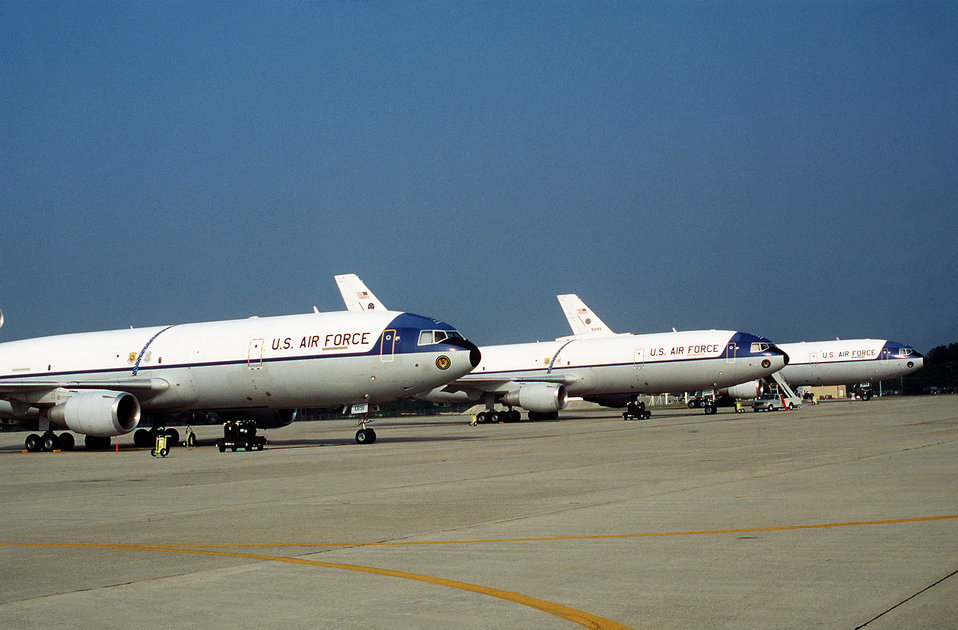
KC-10A Extender

1990's -- KC-10A Extender aircraft stand on the flight line prior to deploying to Saudi Arabia during Operation Desert Shield.